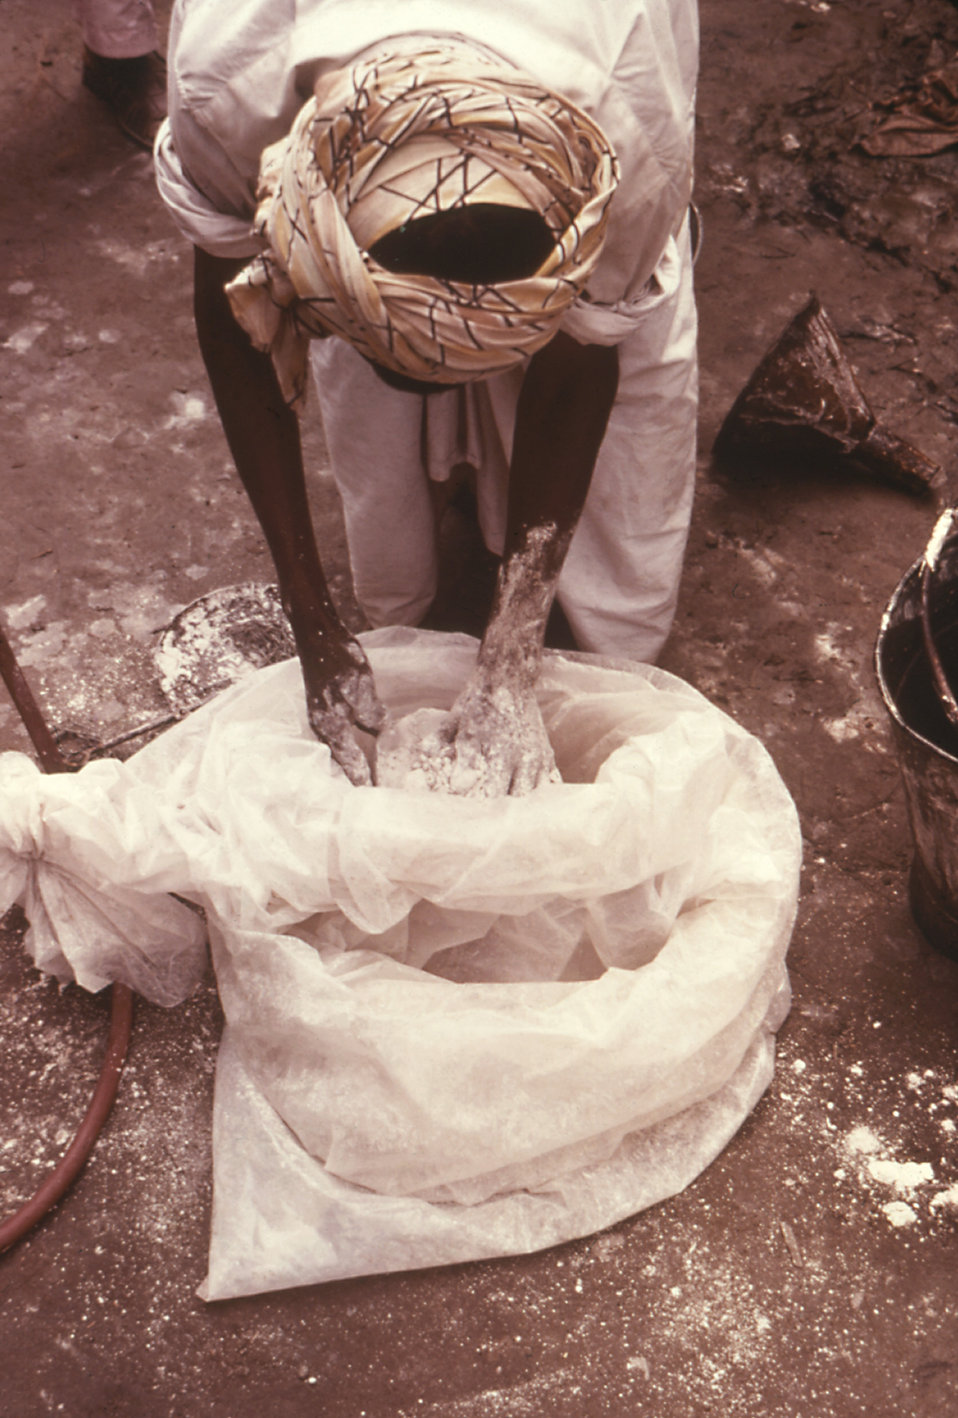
This 1976 image depicts a Pakistani malaria control worker mixing malathion spray powder without covering his exposed skin.